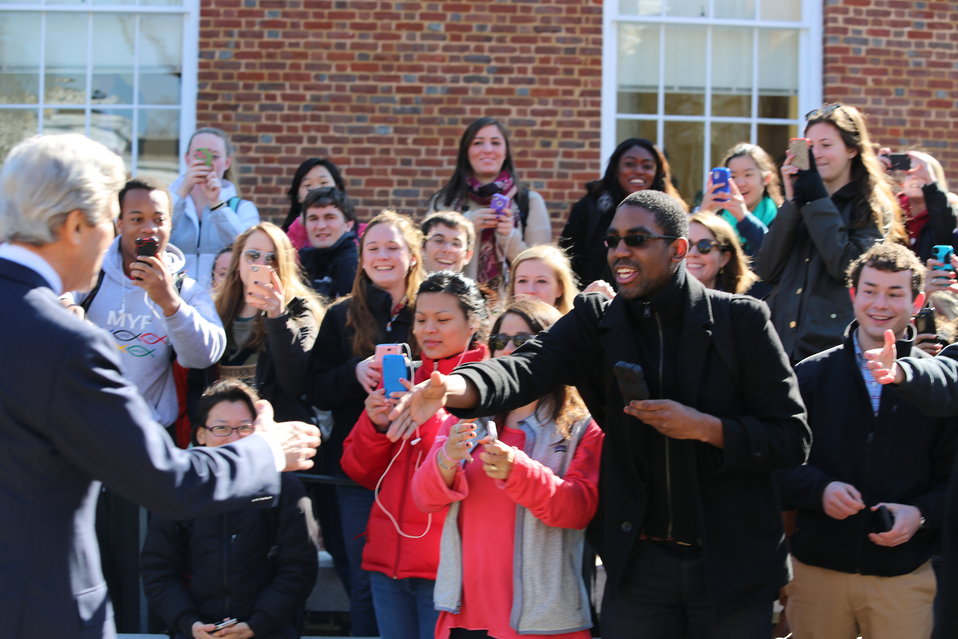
Secretary Kerry Meets With UVA Students

U.S. Secretary of State John Kerry meets with students at the University of Virginia in Charlottesville, Virginia, February 20, 2013.